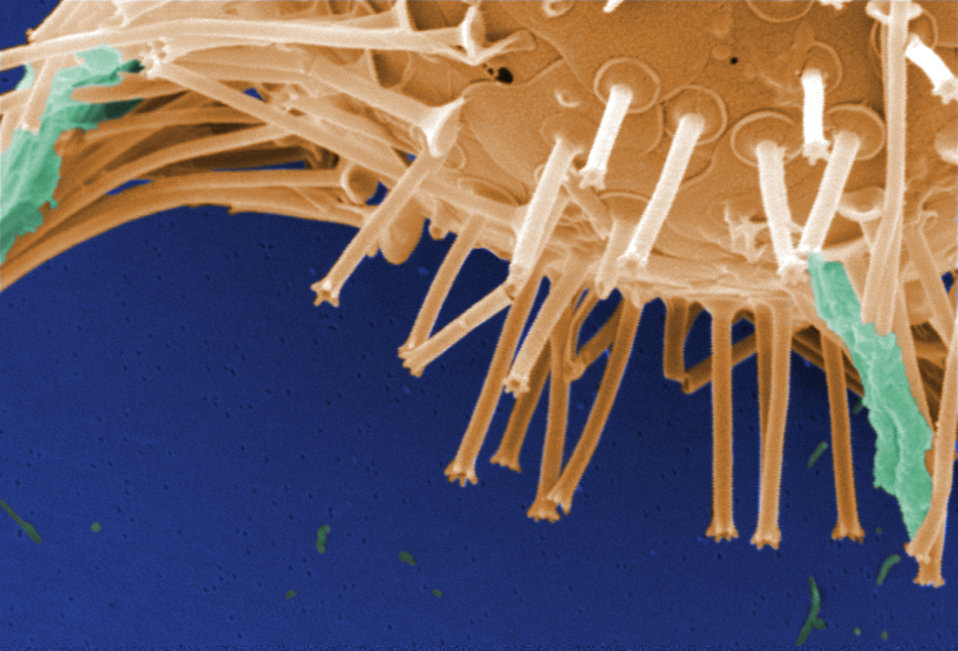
This digitally-colorized scanning electron micrograph (SEM) of an untreated water specimen extracted from a wild stream mainly used to control flooding during inclement weather, revealed the presence of unidentified organisms, which included bacteria, protozoa, and algae. In this particular view, a microorganism is featured, the exterior of which is covered by numerous projections imparting an appearance of a sea urchin. This microscopic 'pin cushion' was teathered to its surroundings by a biofilm within which many bacteria, and amoeboid protozoa could be seen enmeshed as well. See PHIL 11682 and 11683, for additional views of this creature under successively greater magnifications.